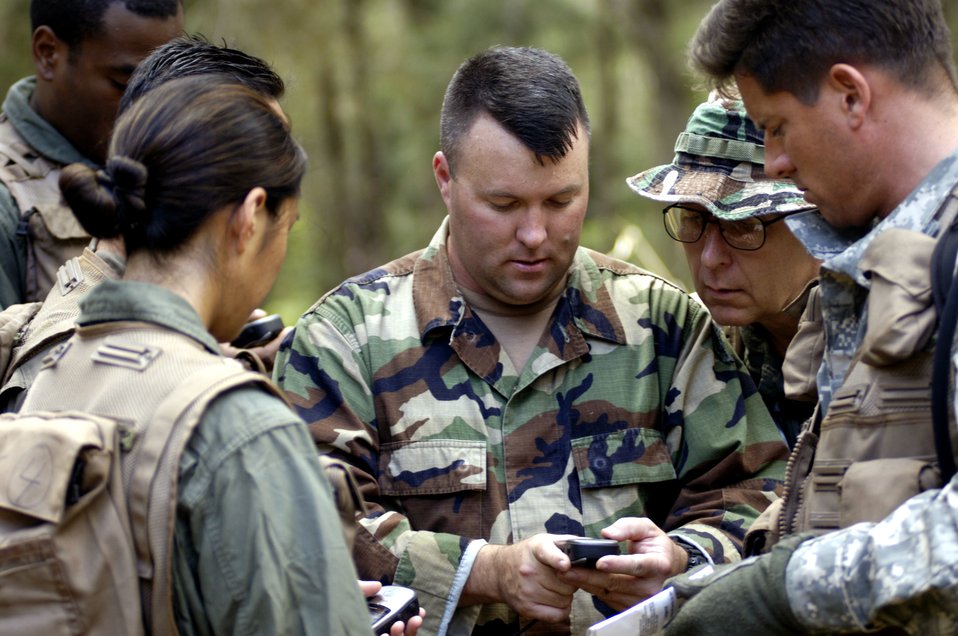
Career fields meld expertise in recovery missions

Staff Sgt. Christopher Ferguson explains how to use a Global Positioning System to students during a ground survival refresher course May 4 at Hawaii's Schofield Barracks training area. The course provides hands-on realistic training for aircrew members that concentrates on the principles, techniques and skills necessary to survive in any environment and return home. Sergeant Ferguson is a survival, evasion resistance and escape instructor.